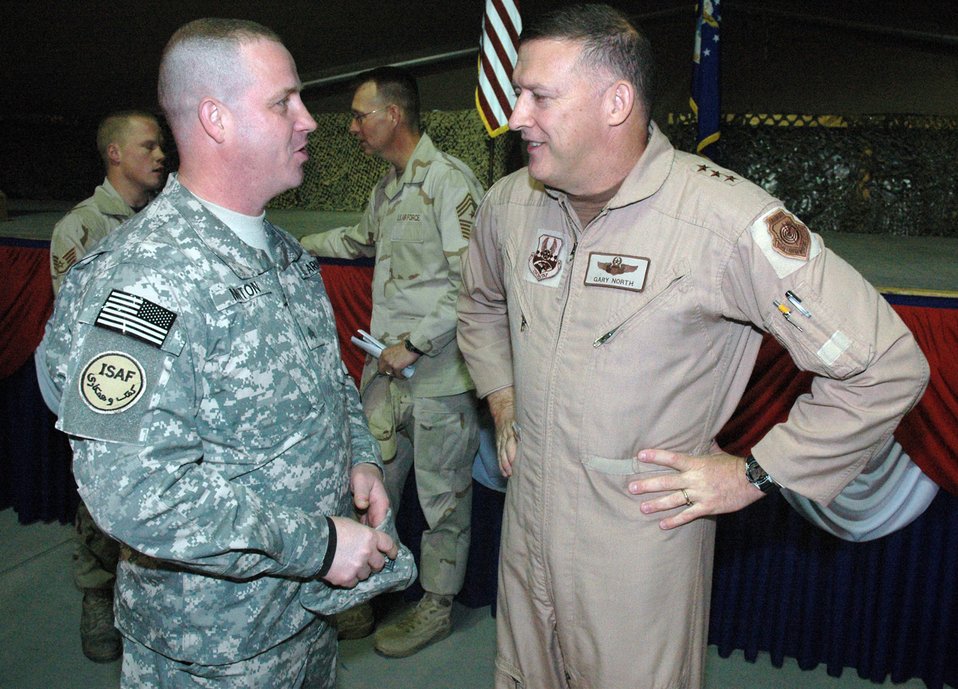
General North visits Manas Air Base

Lt. Gen. Gary North talks air power integration and his contract with ground forces with Army Staff Sgt. Jon Minton, 376th Expeditionary Logistics Readiness Squadron Liaison Officer, at Manas Air Base, Kyrgyzstan.